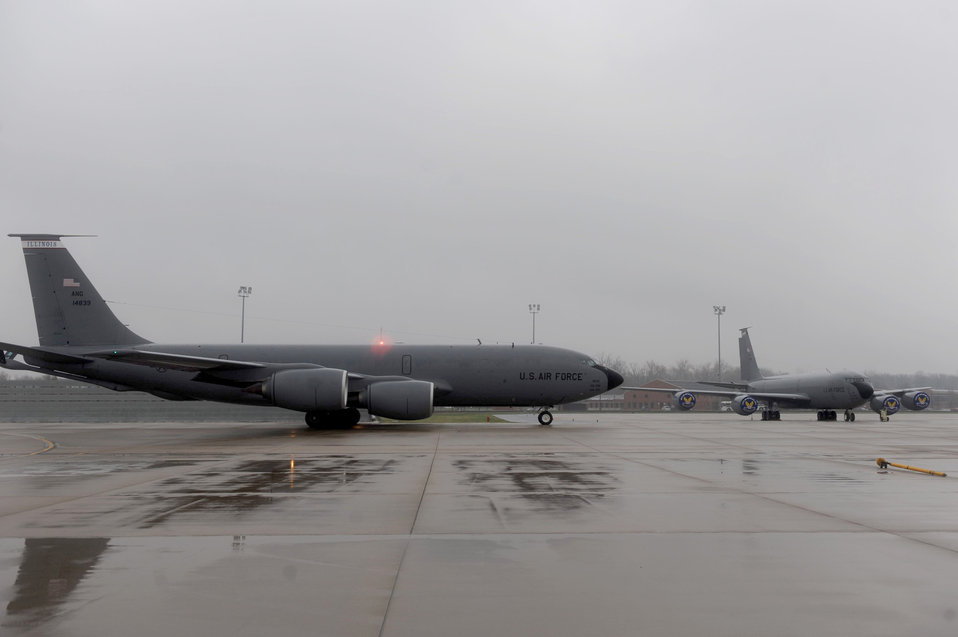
Guardsmen deploy in support of Operation Odyssey Dawn

A KC-135 Stratotanker taxis out for takeoff March 25, 2011, at Scott Air Force Base, Ill., en route to a forward-deployed location in support of Operation Odyssey Dawn.